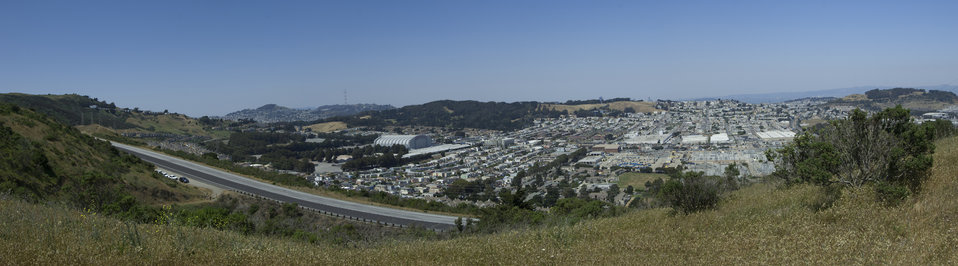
Development Surrounding San Bruno Mtn

photo credit - Sarah Swenty/USFWS

Surrounded by development, San Bruno Mountain is the location where the nation's 1st ever Habitat Conservation Plan (HCP) was implemented